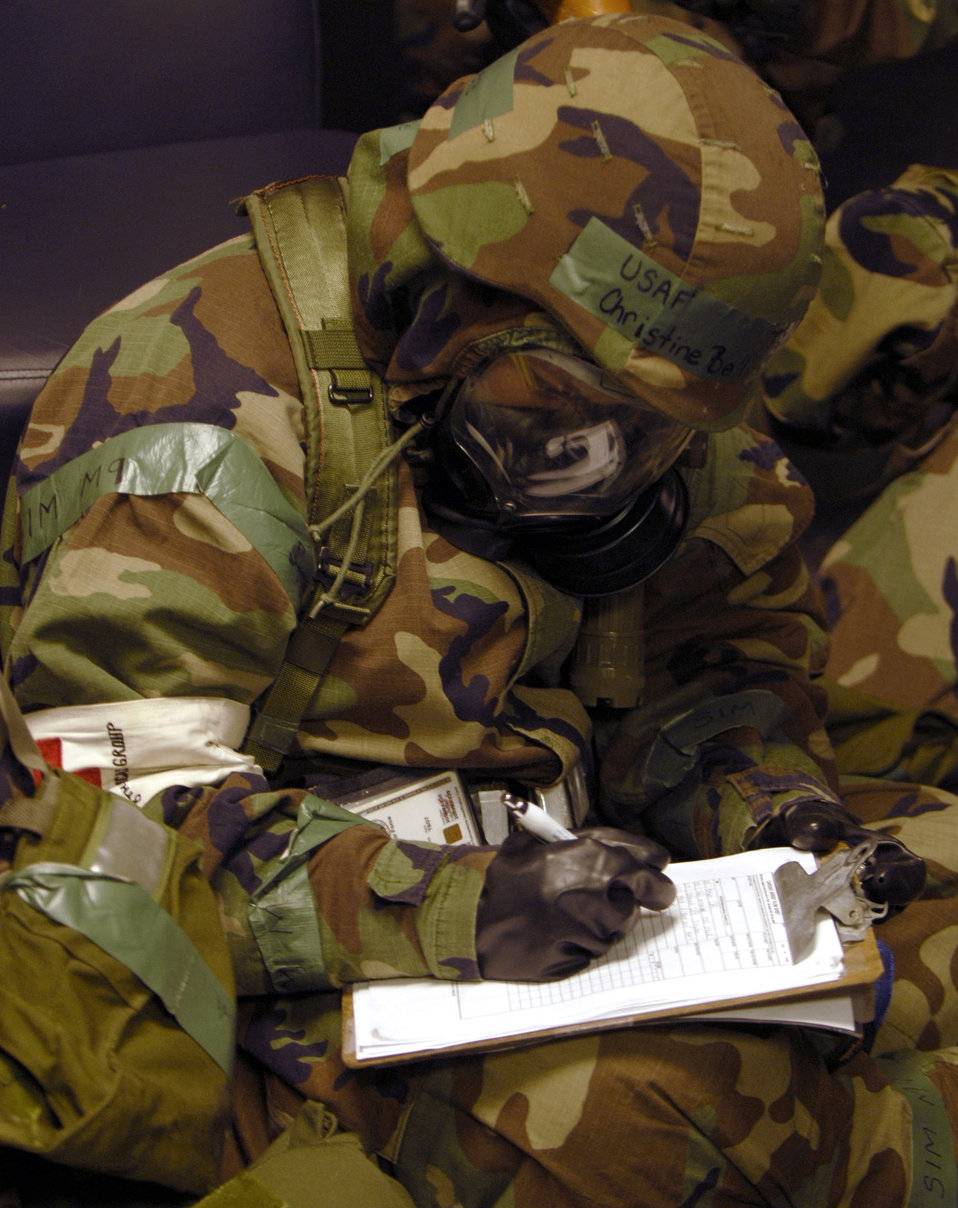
Testing readiness at Kunsan

Tech. Sgt. Christine Bellinghiere documents a patient's condition during a simulated cardiac arrest during the Peninsula Operational Readiness Exercise Nov. 7 at Kunsan Air Base, South Korea. The exercise is conducted to ensure base members remain ready to execute its mission. Sergeant Bellinghiere is assigned to the 8th Medical Operations Squadron.